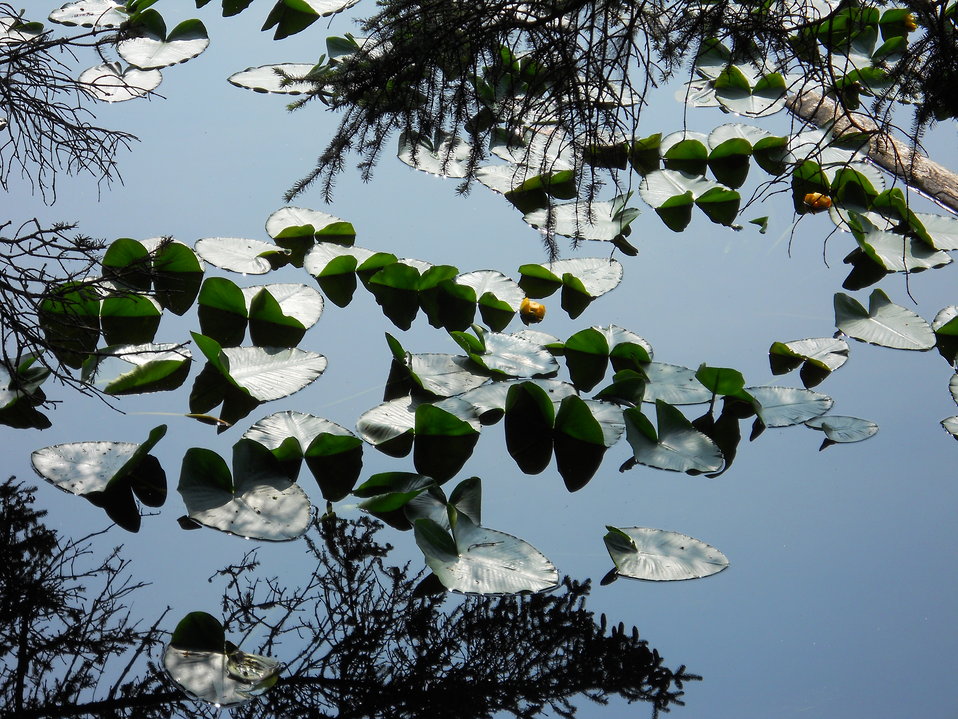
Lily Pads

Credit: USFWS
Photo taken by a Salmon Camp participant during a nature photography activity.

Source and Contact: Kodiak National Wildlife Refuge